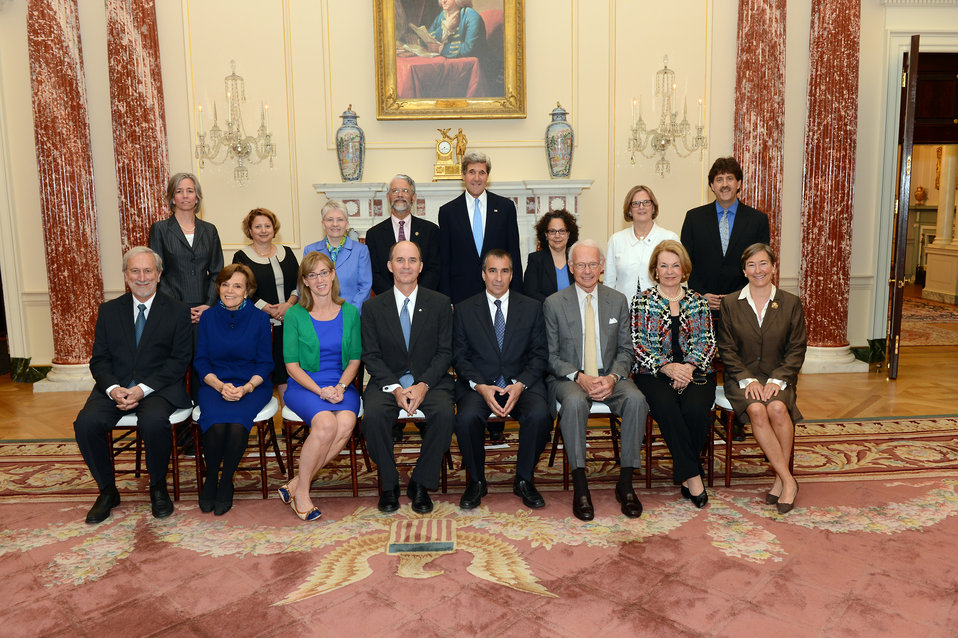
Secretary Kerry Hosts the Oceans Conference Roundtable

U.S. Secretary of State John Kerry hosts the Oceans Conference Roundtable at the U.S. Department of State in Washington, D.C., on June 6, 2013.